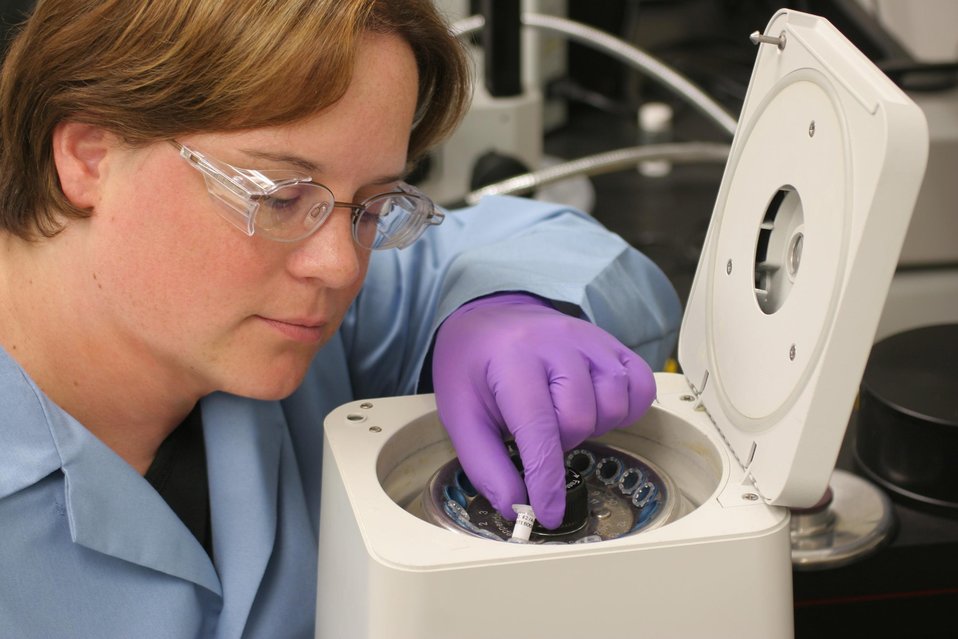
A PACIFIC NORTHWEST NATIONAL LABORATORY SCIENTIST PREPARES BACTERIAL SPORE SAMPLES FOR AGAR ANALYSIS.

AGAR IS A SOLID SUPPORT FOR GROWTH MEDIA. IF HEATED IN A WATER BATH, IT MELTS THE RESIDUAL AGAR FROM THE SAMPLE. DISCOVERING THE EXISTENCE OR ABSENCE OF AGAR IN A SPORE SAMPLE PROVIDES IMPORTANT DATA FOR FORENSICS IN NATIONAL SECURITY.